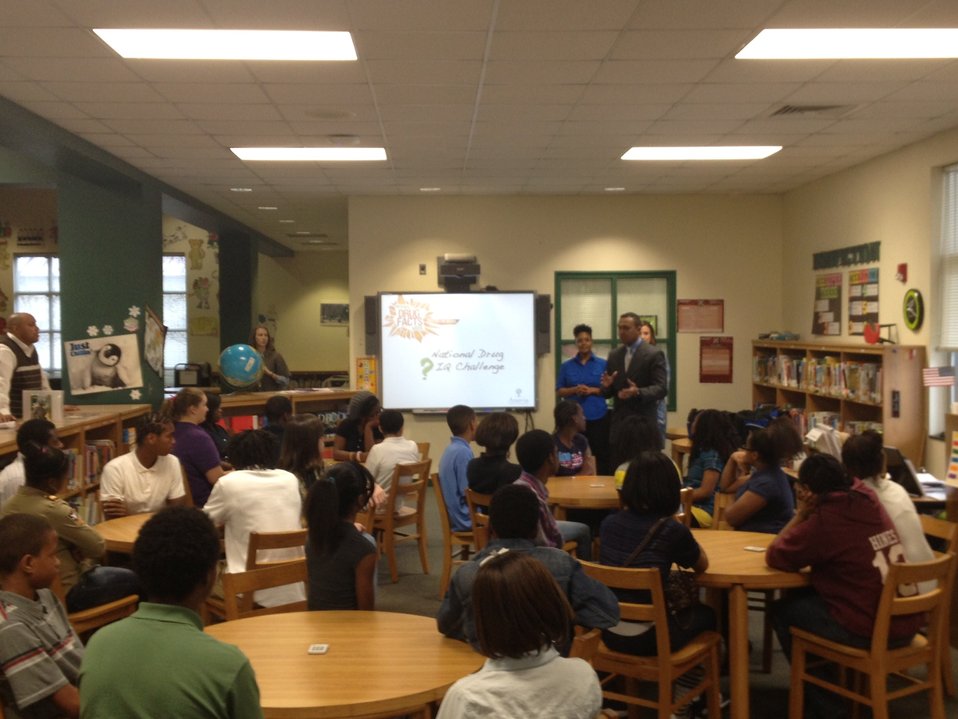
Walter G. Byers Students in Charlotte, NC take Drug IQ